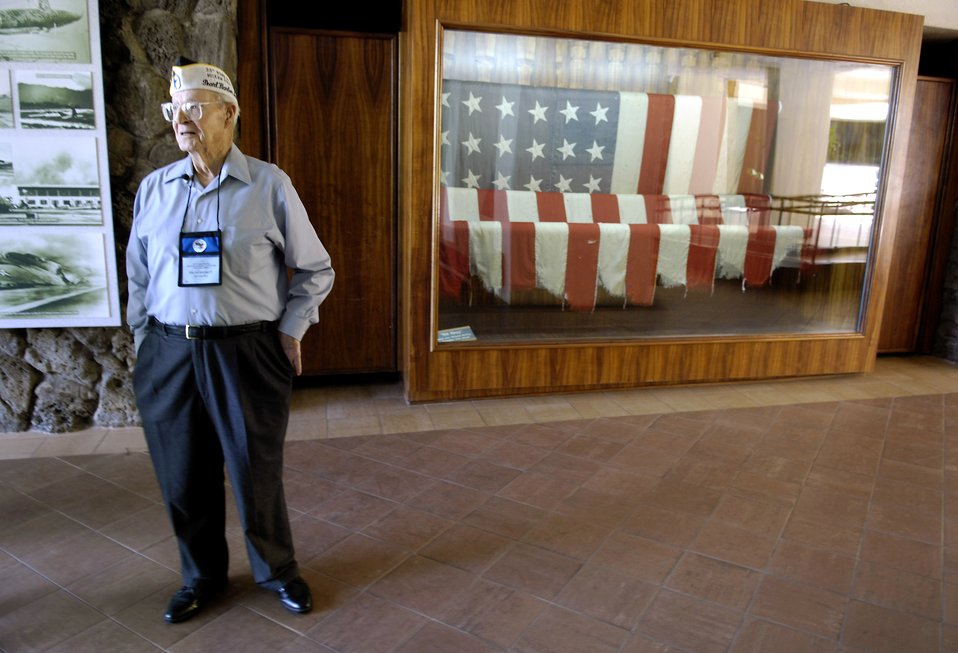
Remembering Pearl Harbor

Retired Chief Master Sgt. Ralph Barnett stands in the foyer of the Pacific Air Forces Headquarters building Dec. 4, at Hickam Air Force Base, Hawaii. The flag that Chief Barnett is standing in front of was the flag that flew over Hickam Field during the attack by Japan on Dec. 7, 1941.